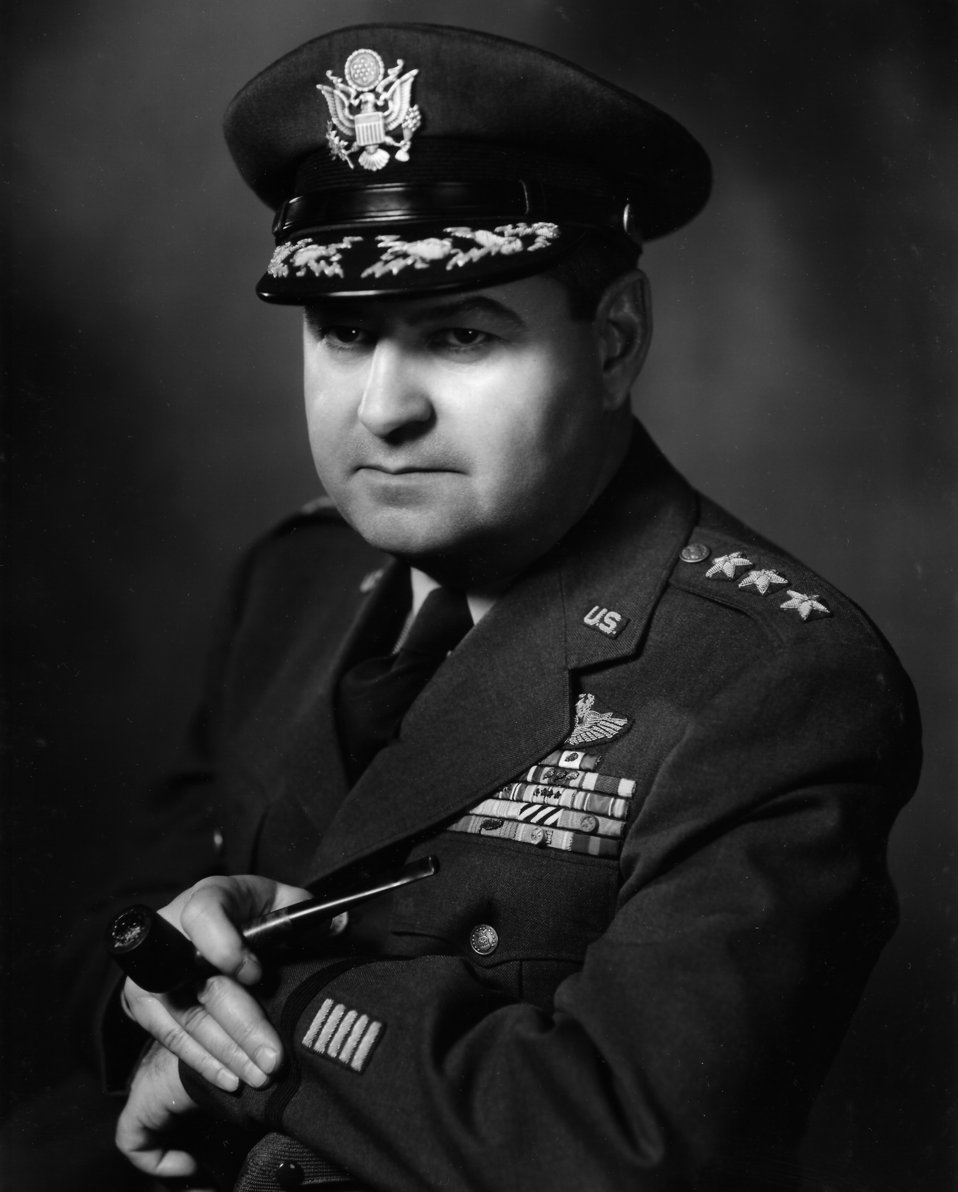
Curtis LeMay

1940's -- Curtis LeMay